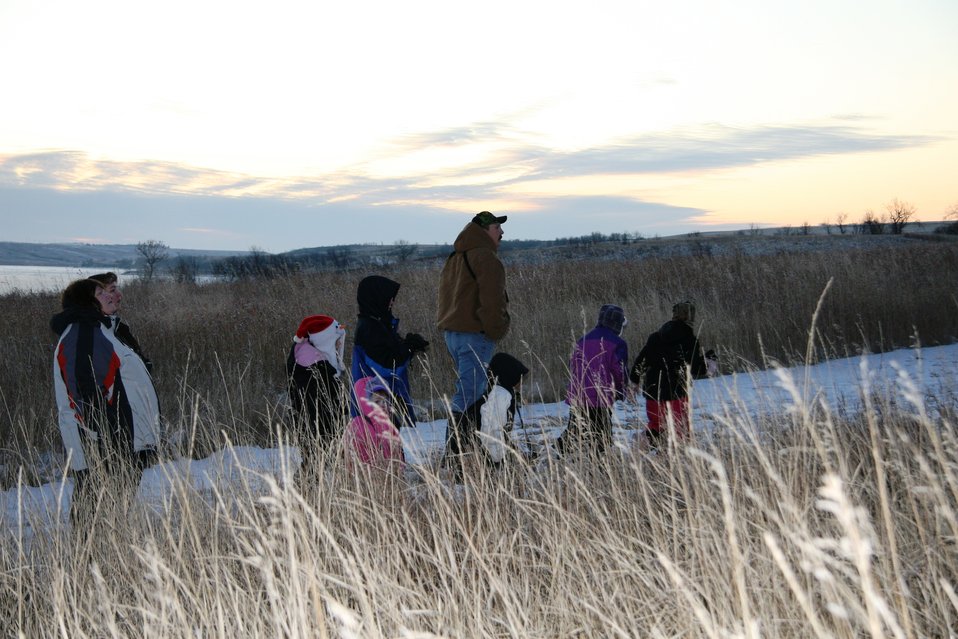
Two Black-capped Chickadees

CBC4Kids - Participants began their day learning about how to properly use binoculars and then set off for a birding hike. Program coordinators discussed some birding rules and 'basics' during the hike. The group is looking at two black-capped chickadees in this photo.